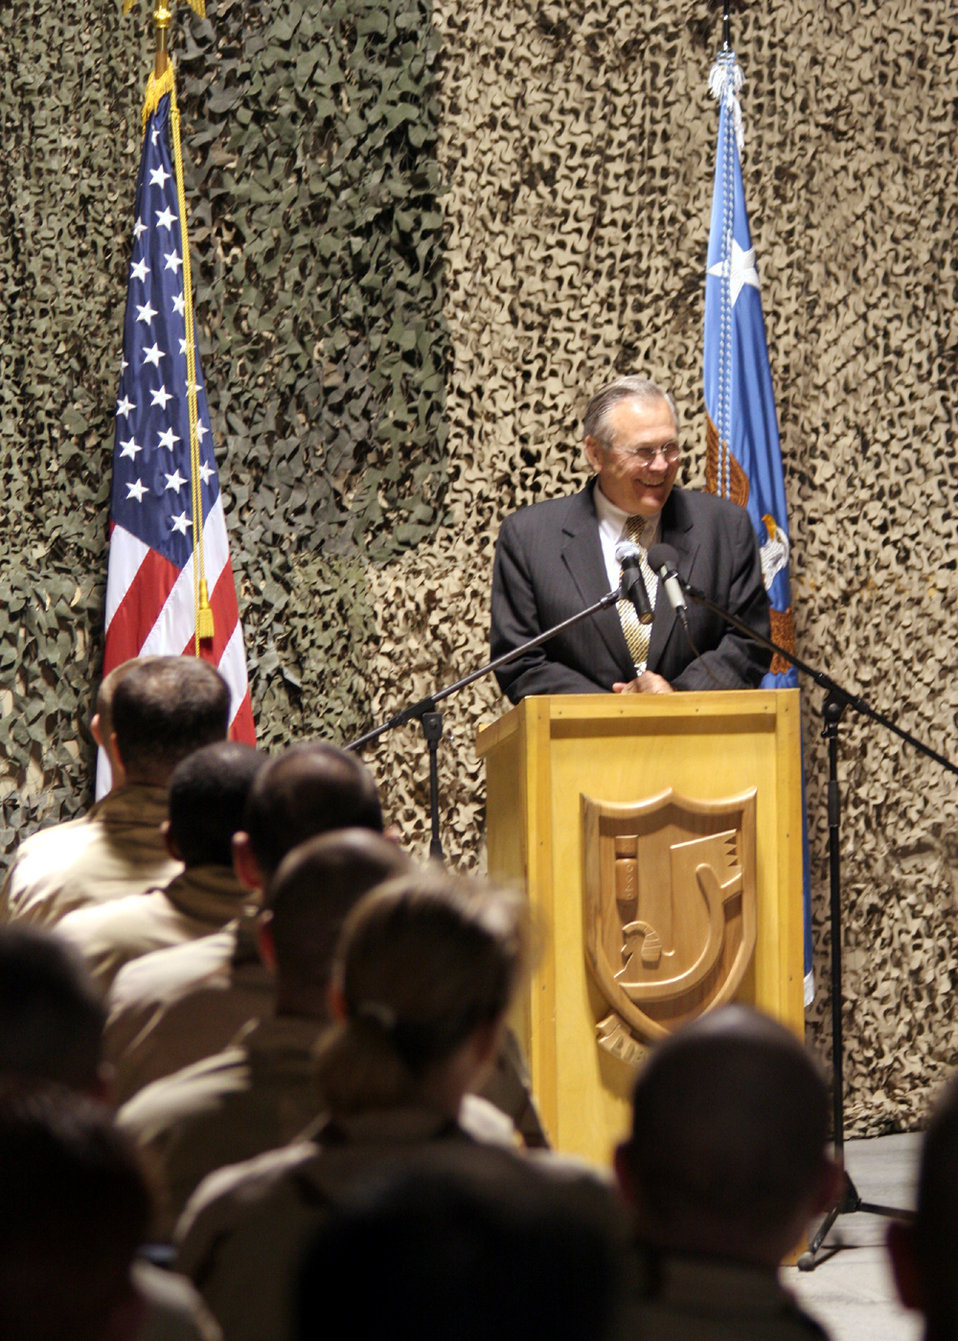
Rumsfeld visits Airmen at Manas

MANAS AIR BASE, Kyrgyzstan -- Defense Secretary Donald Rumsfeld answers questions during a town hall meeting with Airmen here April 14. He visited the base as a part of his tour through U.S. Central Command's area of operations.